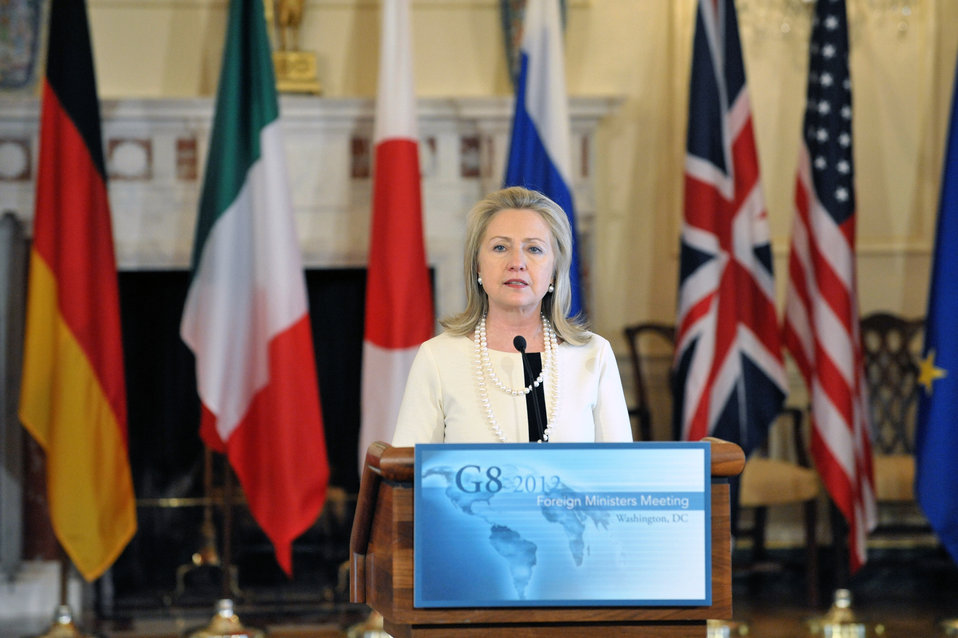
Secretary Clinton Delivers Remarks After the G8 Ministerial

U.S. Secretary of State Hillary Rodham Clinton delivers remarks to the press at the conclusion of the G8 Ministerial at the Department of State in Washington, D.C. on April 12, 2012.